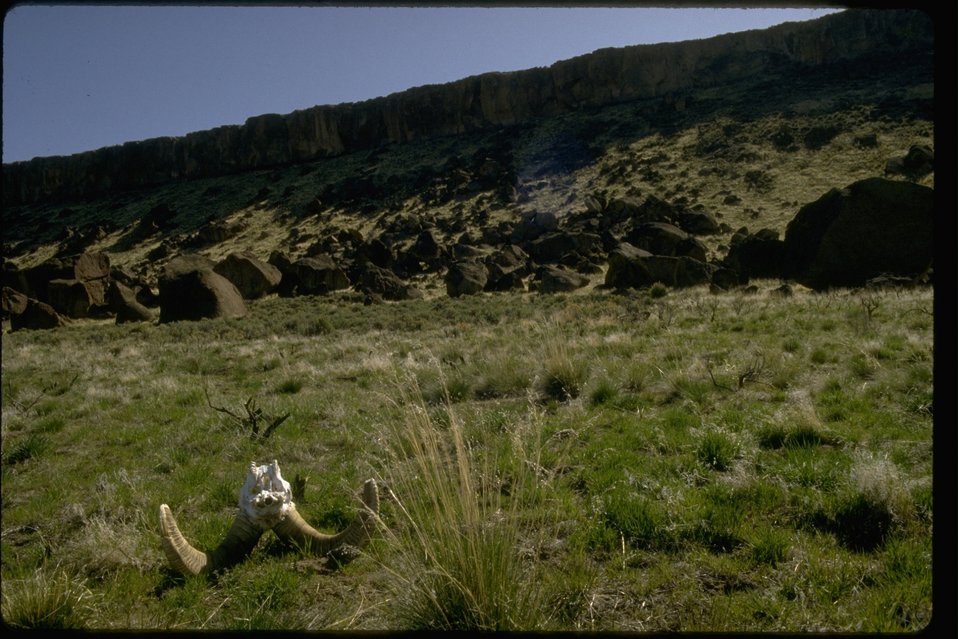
Sheep horns in the prairie grass of Orejana Canyon Wilderness Study Area.